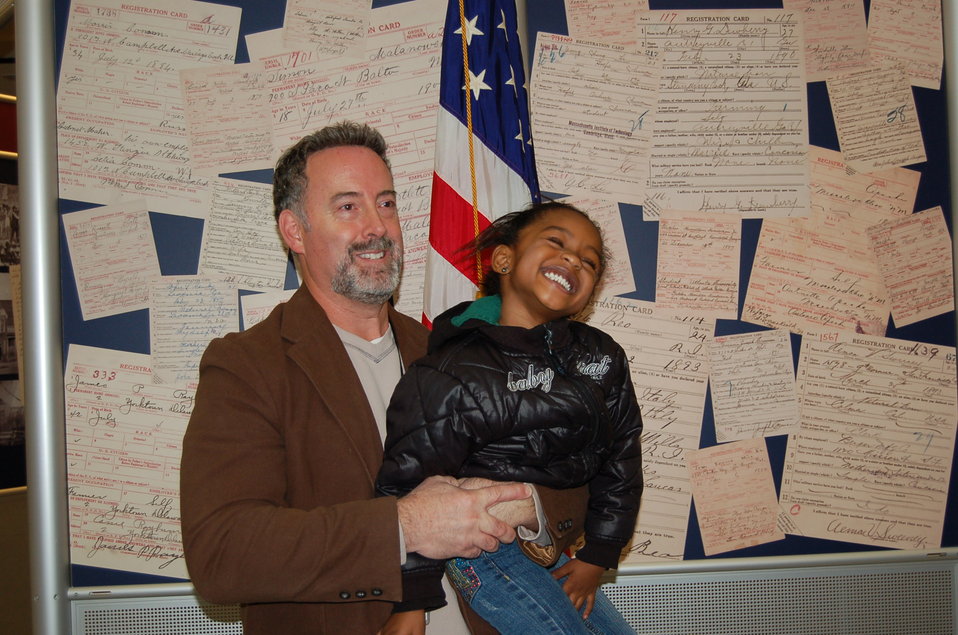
New Citizens